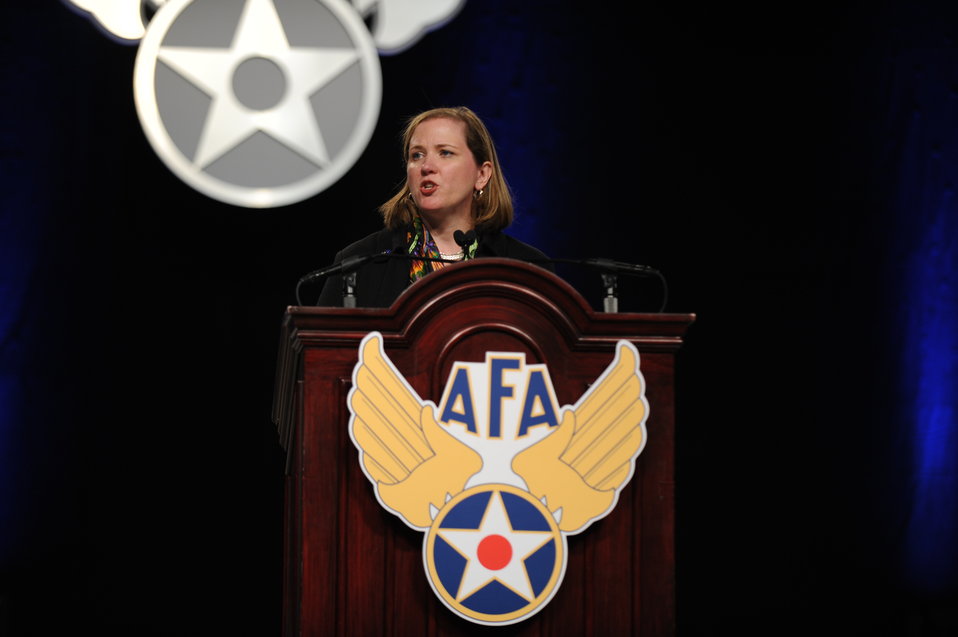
Air Force Under Secretary stresses innovation amidst rough fiscal waters

Under Secretary of the Air Force Erin Conaton addresses Airmen, interagency partners and industry leaders Sept. 20, 2011, about strategic opportunities and the need for innovation in the current fiscal environment during the Air Force Association's 2011 Air & Space Conference and Technology Exposition at National Harbor, Md.